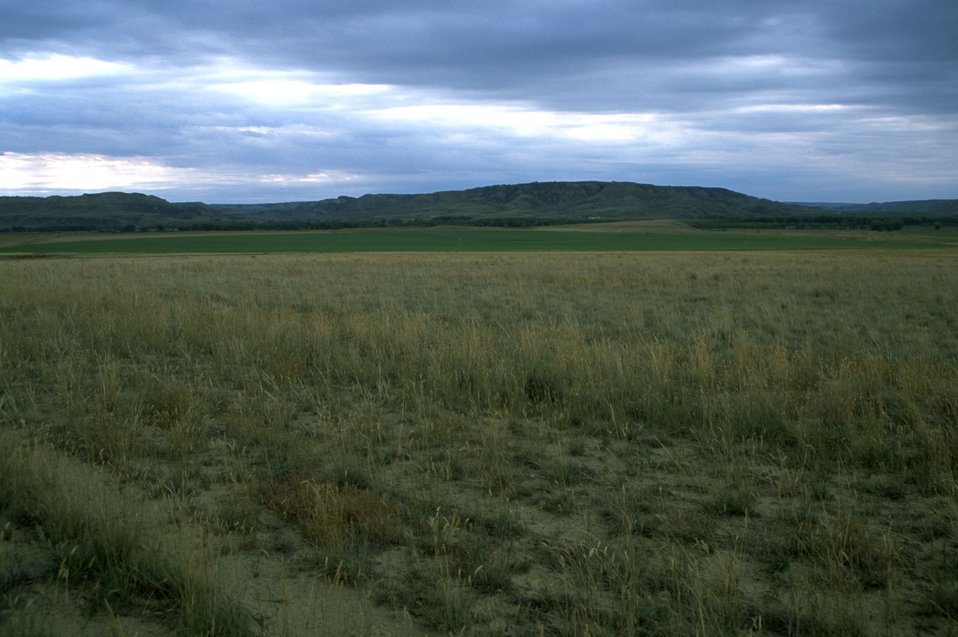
Agricultural land near Judith Landing